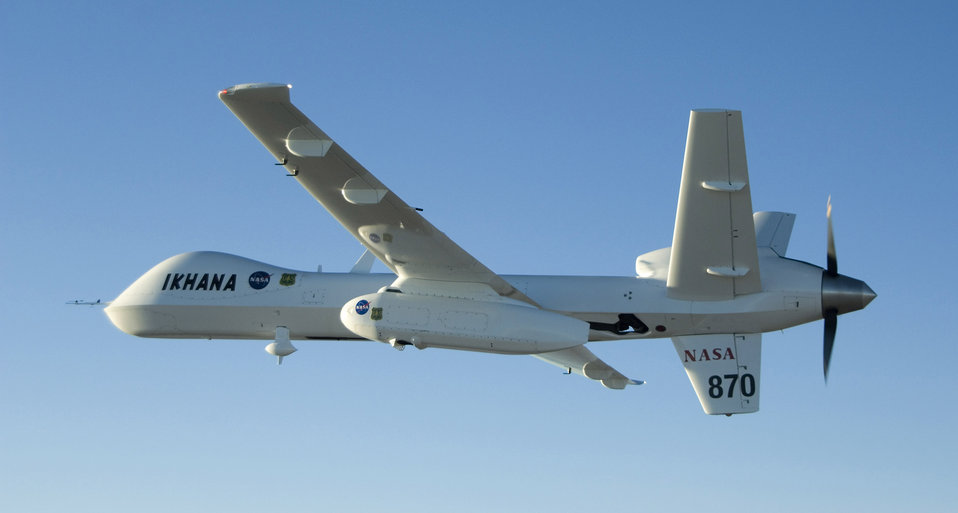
NASA evaluates sensor technology for future aircraft efficiency

NASA's Ikhana, a modified Predator B unmanned aircraft adapted for civilian research, is being used to test advanced, fiber optic-based sensing technology that could aid development of active control of wing shape.